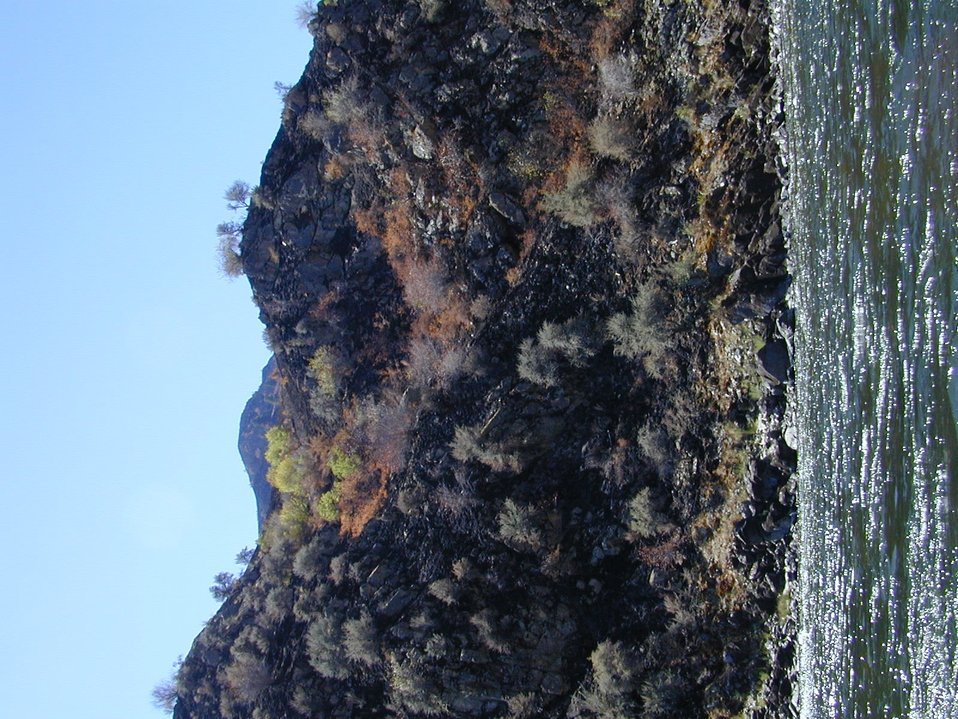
Scenic shot of Lower Salmon River Cottonwood Field Office UCSC Upper Columbia Salmon Clearwater District